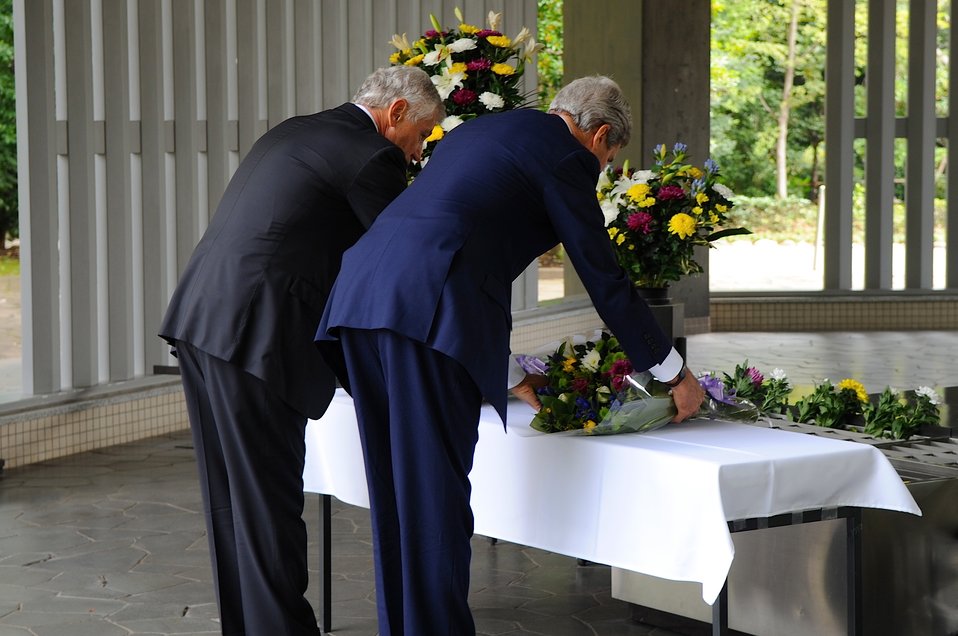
Secretary of State Kerry and Defense Secretary Hagel at at the Chidorigafuchi National Cemetery in Tokyo

U.S. Secretary of State John Kerry and U.S. Defense Secretary Chuck Hagel lay wreaths at the Chidorigafuchi National Cemetery in Tokyo before meeting with their Japanese counterparts on October 3, 2013.